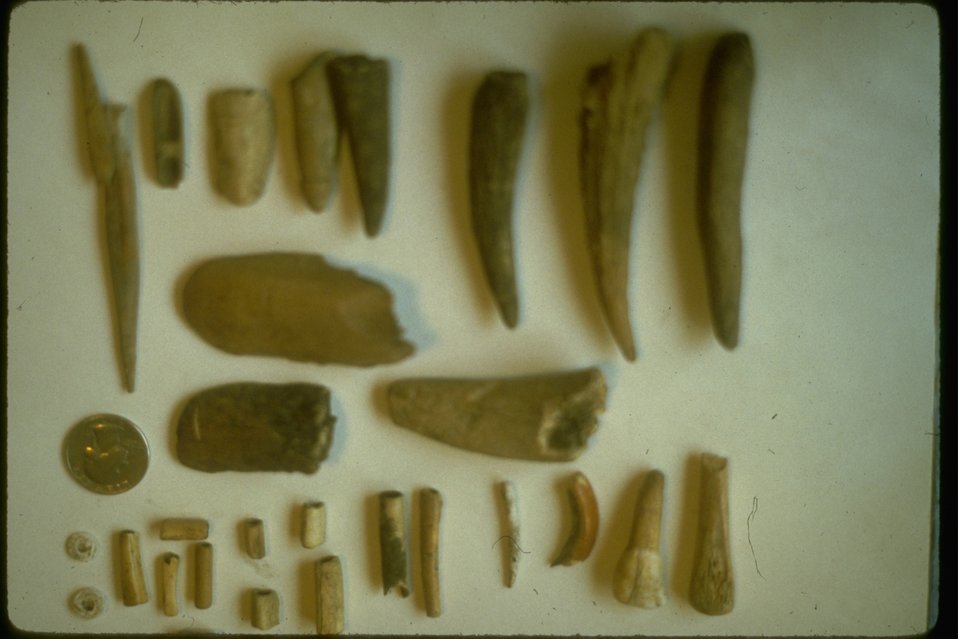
Some sample artifacts on display.